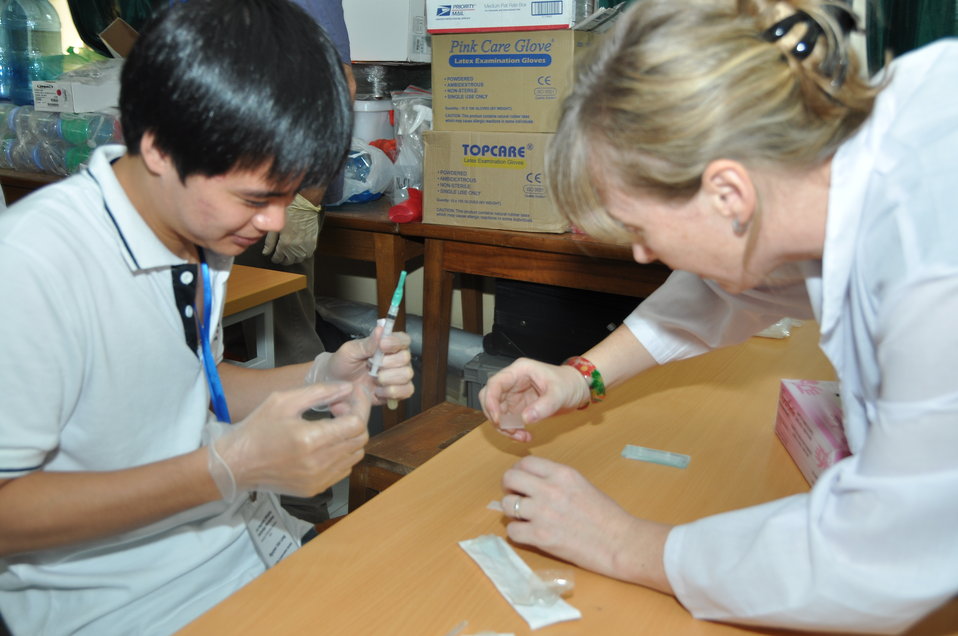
USAID EPT Smithsonian Pathology Training to Detect Emerging Infectious Diseases Wildlife and Other Animals in Vietnam Workshop